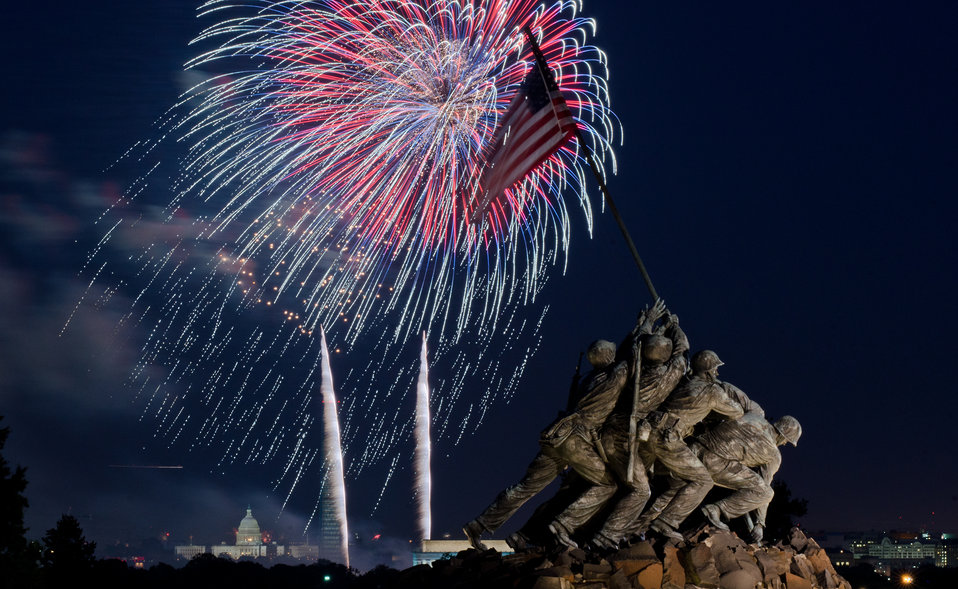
Independence Day celebration fireworks are seen from the Iwo Jima, U.S. Marine Corps Memorial in Arlington, VA on Jul. 4, 2013. In the distance are the Lincoln Memorial, the U.S. Department of Agriculture (USDA) Yates Building (dark red brick building), the Washington Monument (with scaffolding), and the U.S. Capitol building in Washington, D.C.